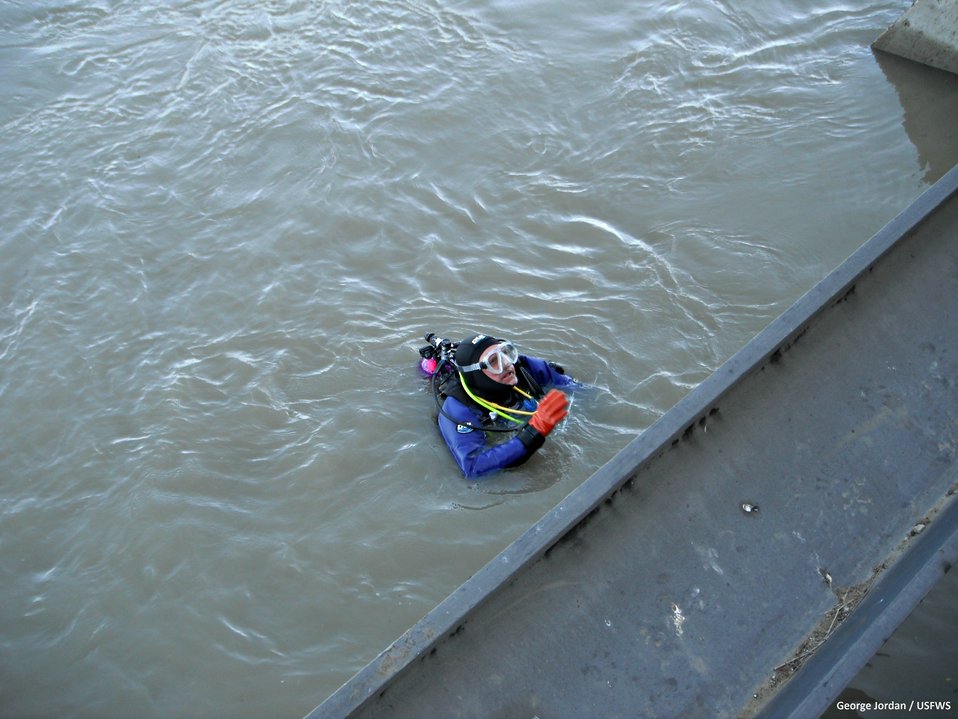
Diver approved

Once the diver was satisfied that the sill was clean it is time to place the screens.